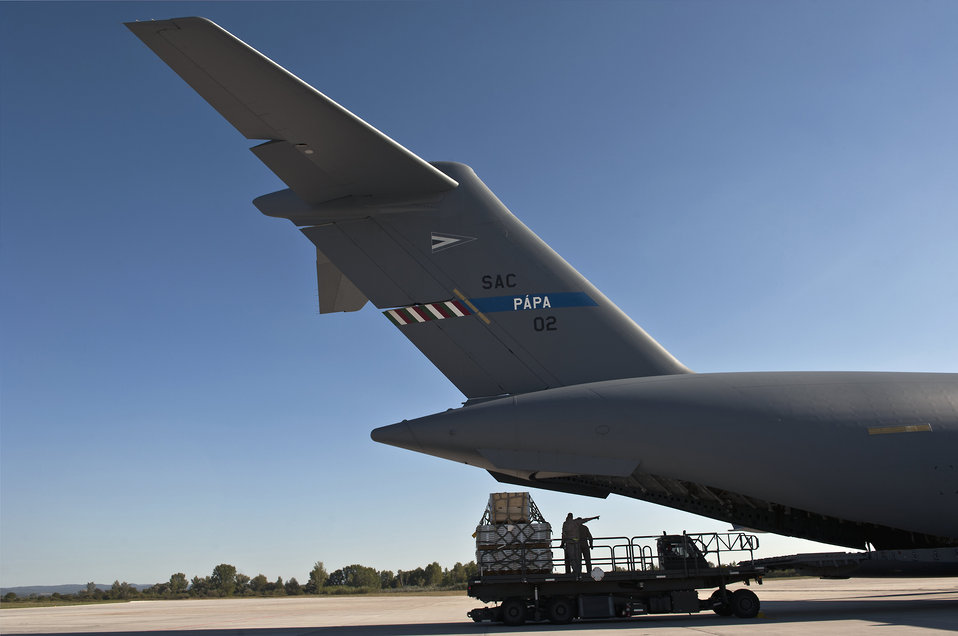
Papa AB, Hungary

Aerial porters remove pallets from a C-17 Globemaster III after a recent Swedish mission. The wing operates a fleet of three Globemaster IIIs under the Strategic Airlift Capability program. The 10 NATO nations that participate in the program are Bulgaria, Estonia, Hungary, Lithuania, the Netherlands, Norway, Poland, Romania, Slovenia, the U.S. and two Partnership for Peace nations, Sweden and Finland.